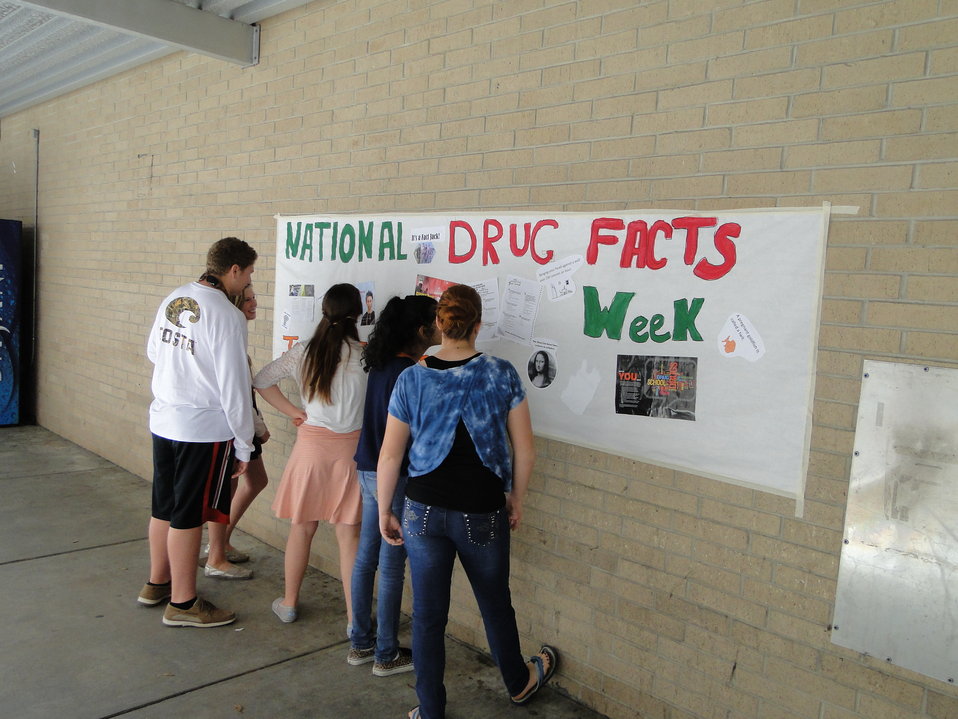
Sebring High School